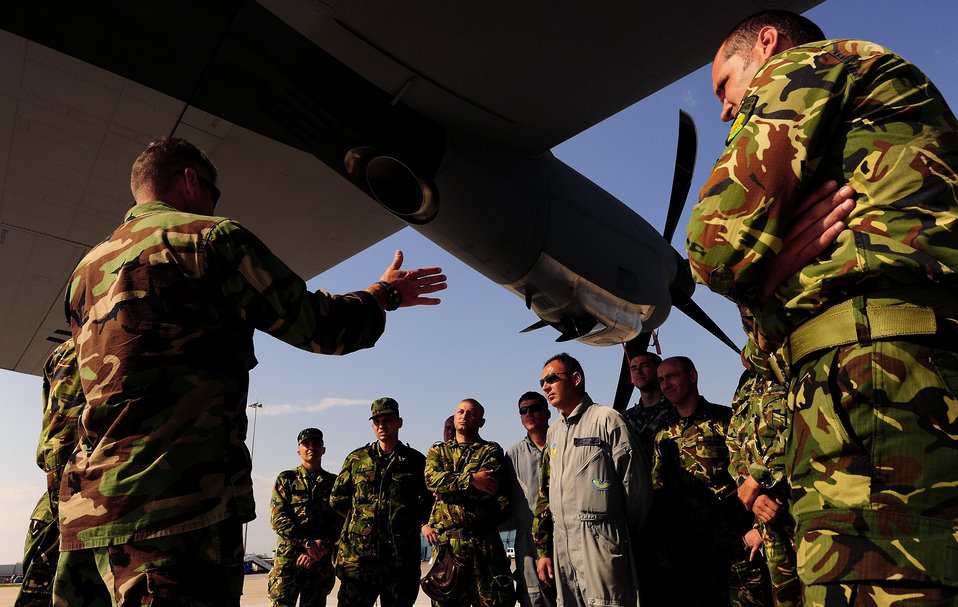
Exercise enhances training, partnerships for U.S., Bulgarian military

Navy Chief Petty Officer Nate Spencer provides jump training to members of the Bulgarian special forces and search and rescue teams in preparation for future jumps during Exercise Thracian Spring 2010 April 22, 2010, at Plovdiv Airport in Bulgaria. Chief Spencer is a jumpmaster with the Explosive Ordnance Mobile Unit 8 in Sigonella, Italy.